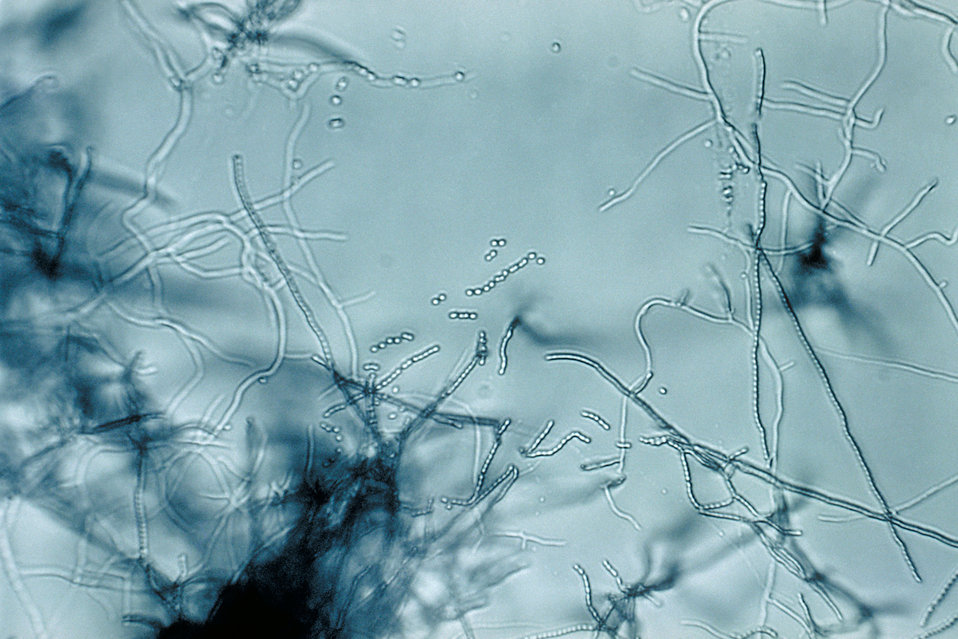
This is a slide culture of a Streptomyces sp. grown on tap water agar.